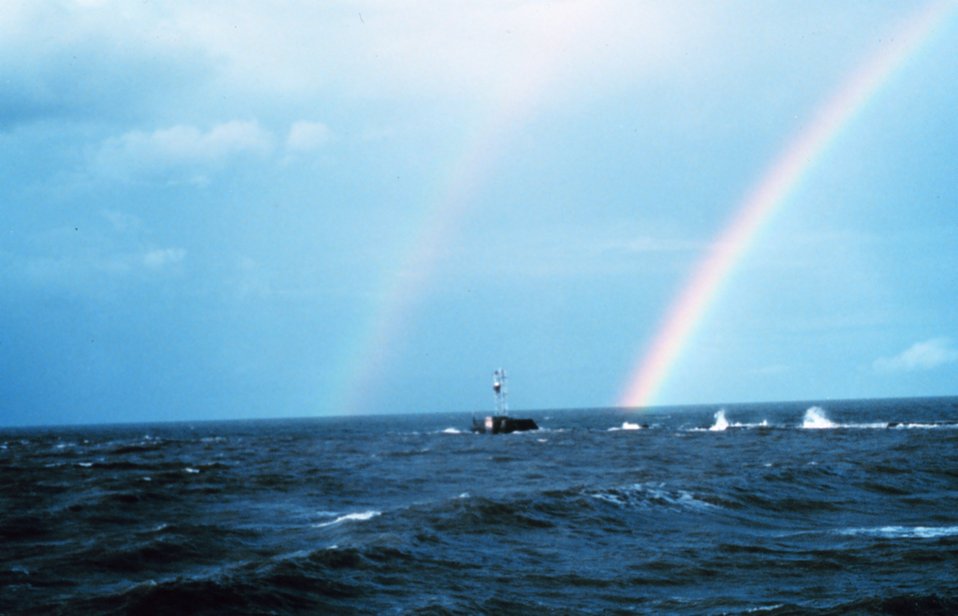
A double rainbow off the breakwater at the entrance to the Calcasieu River.